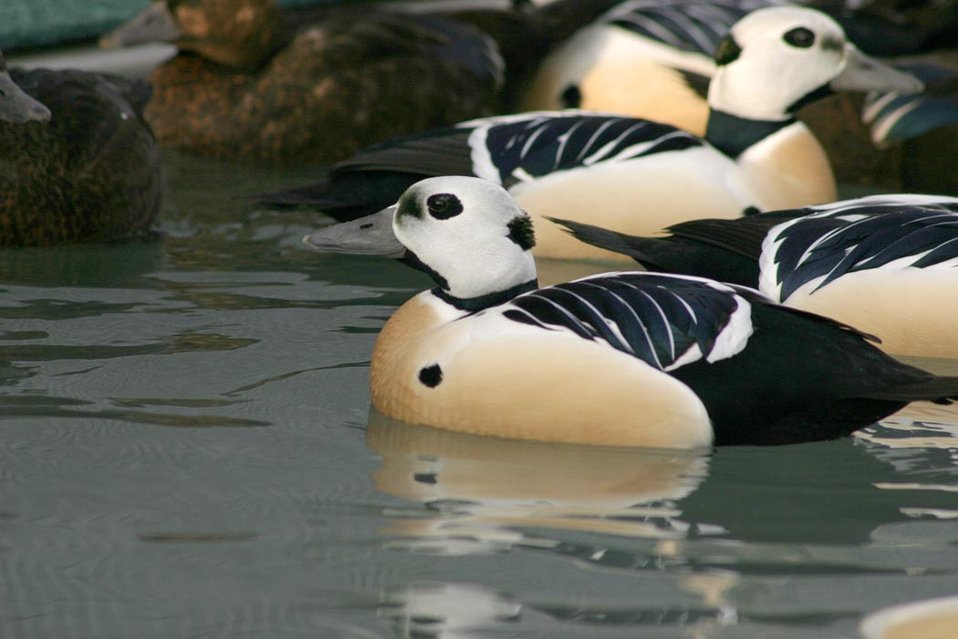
Threatened Steller's eider (Polysticta stelleri) males, Alaska SeaLife Center, Seward, Alaska